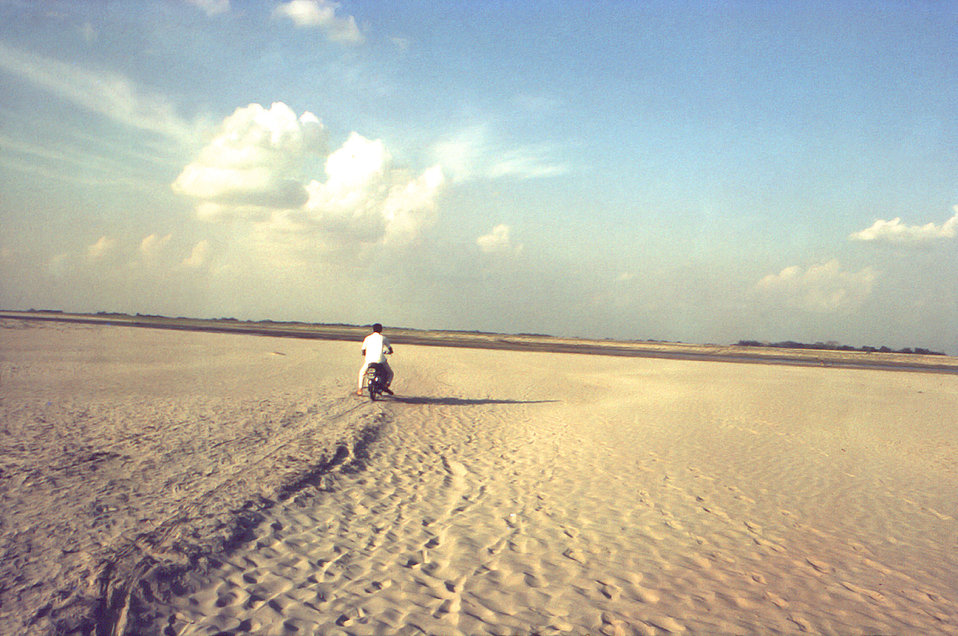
This image depicting a man driving a scooter on sandy ground, is believed to have been taken sometime in the early 1970s, somewhere in Bangladesh during the worldwide smallpox eradication efforts.The Disease